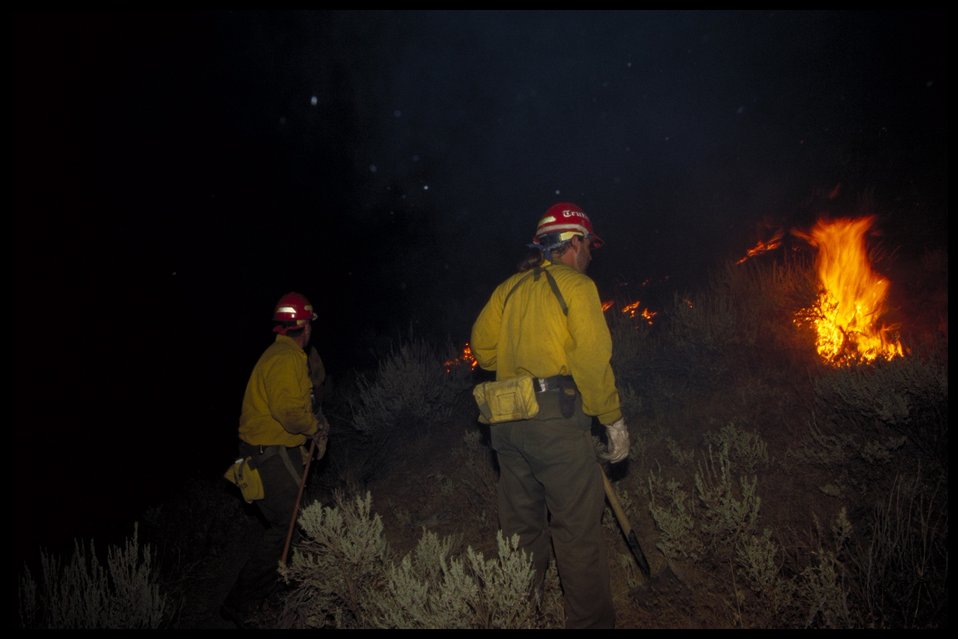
Fire fighters Fire Season 2000 Lower Snake River District LSRD